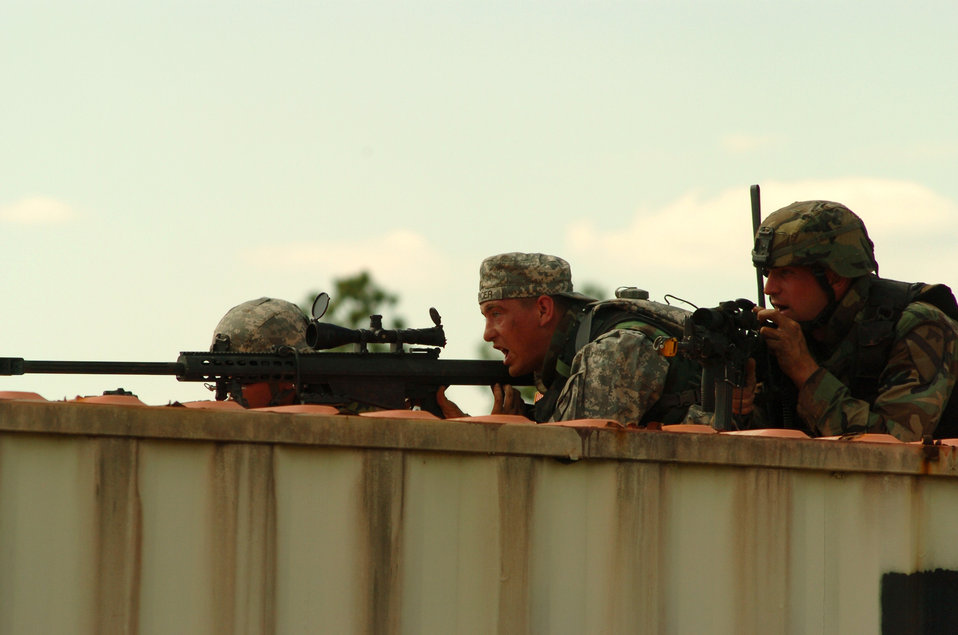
Atlantic Strike III

A sniper team from the 1st Cavalry Division at Fort Hood, Texas, provides security for forward scouts at Avon Park, Fla., on Wednesday, March 29, 2006, as part of Atlantic Strike III, a joint air and ground training event.